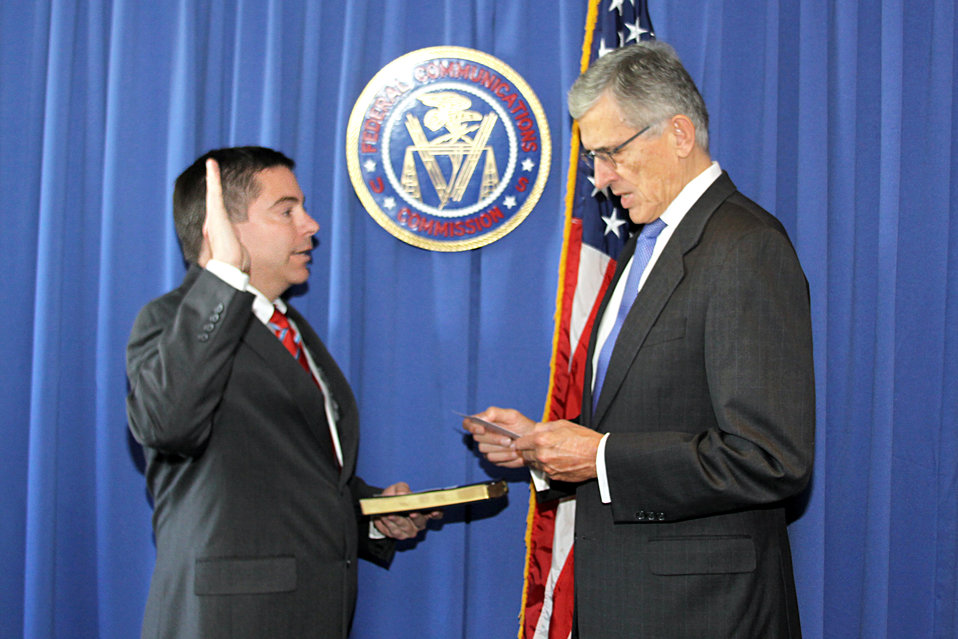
11.4.2013 Commissioner Michael O’Rielly Swearing In Cermony

Chairman Tom Wheeler swearing in Commissioner Michael O'Rielly.